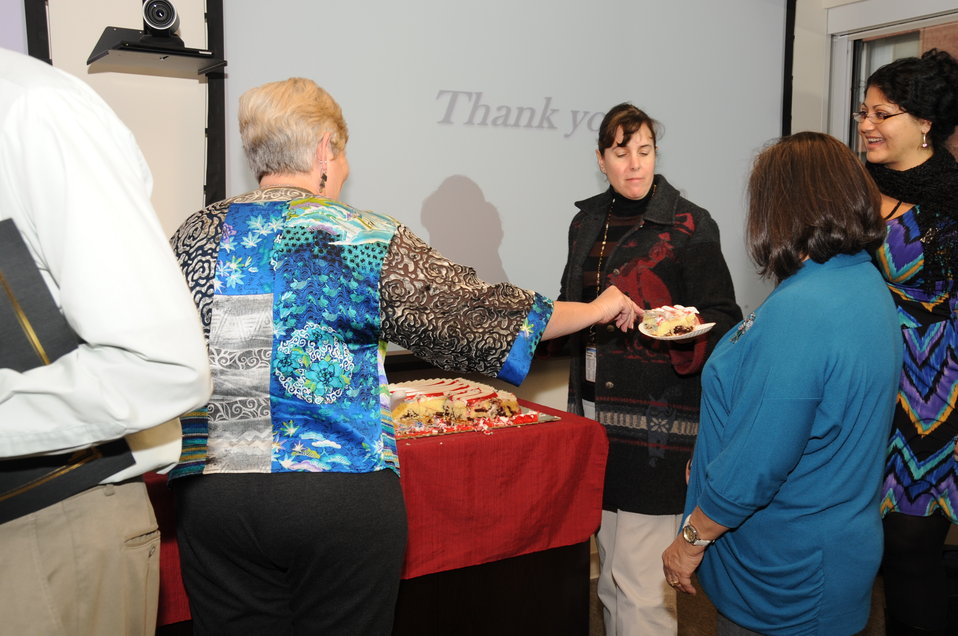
Honoring and Celebrating our Veterans

11.07.2012 Employees gathered in the Arlington Office to honor FWS Veterans